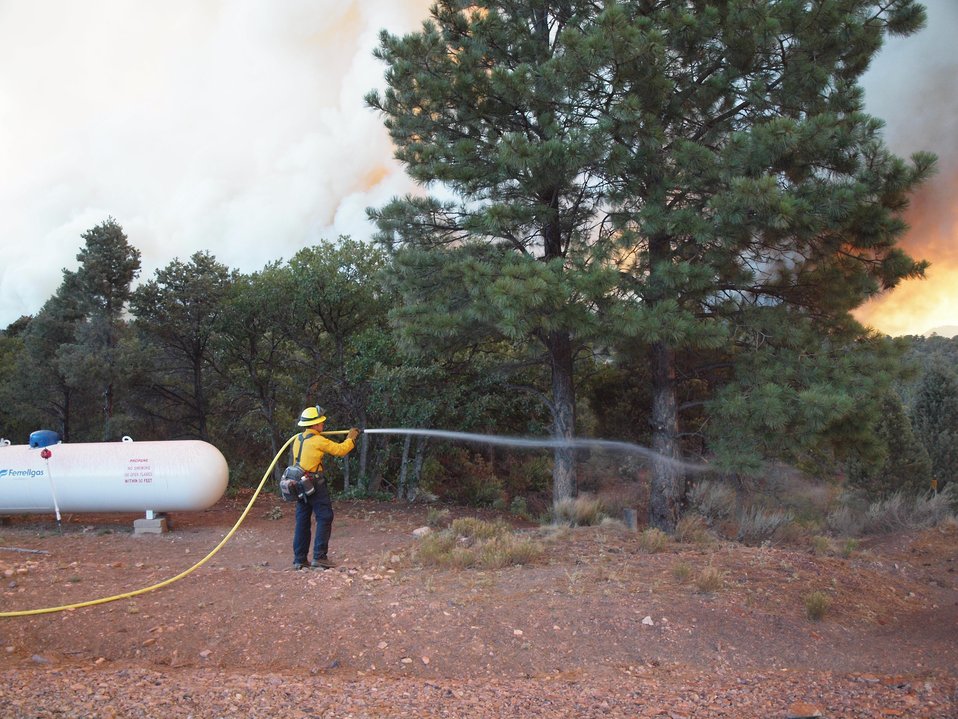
Firefighter wets down area near Harris Ranch. The Carpenter Fire in the Toiyabe National Forest near Humboldt, NV was caused by a lightning strike on Jul. 1, 2013. The fire has consumed nearly 27,881acres and is presently 70% contained.